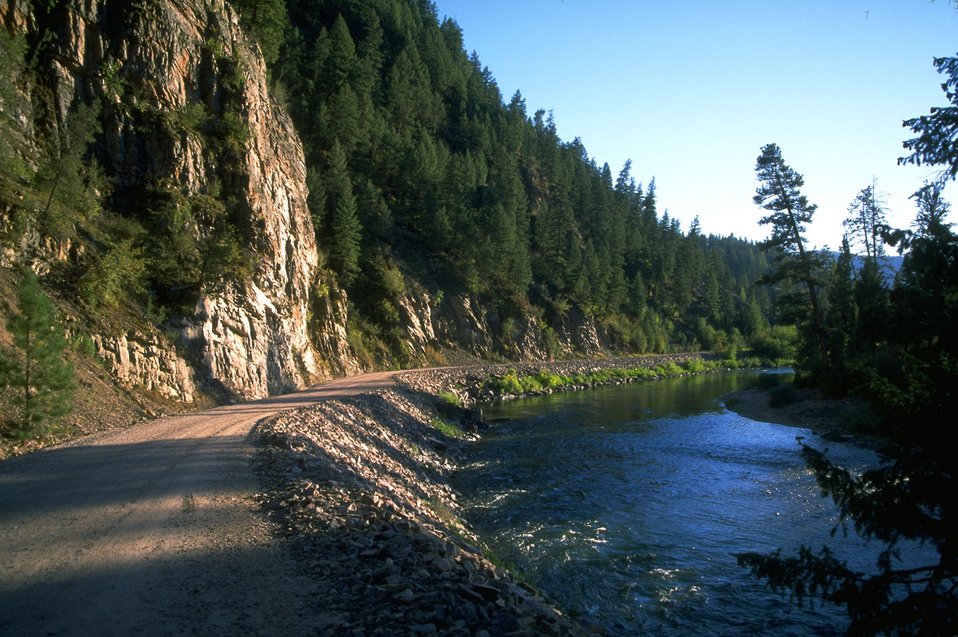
McNamara Road along the Blackfoot River